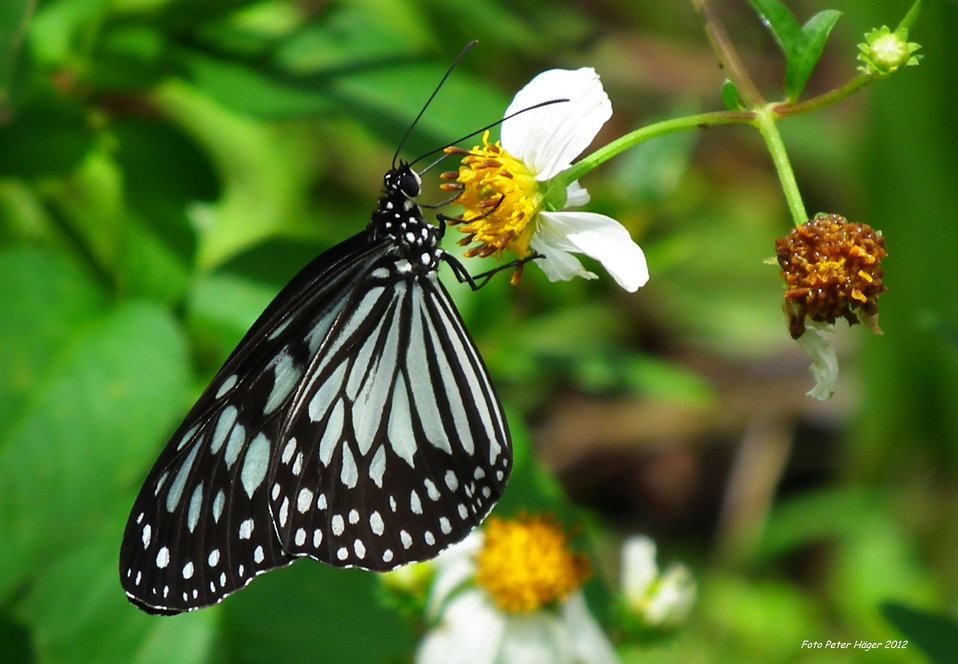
Butterfly photographed at bohol

A beautiful filipino butterfly.